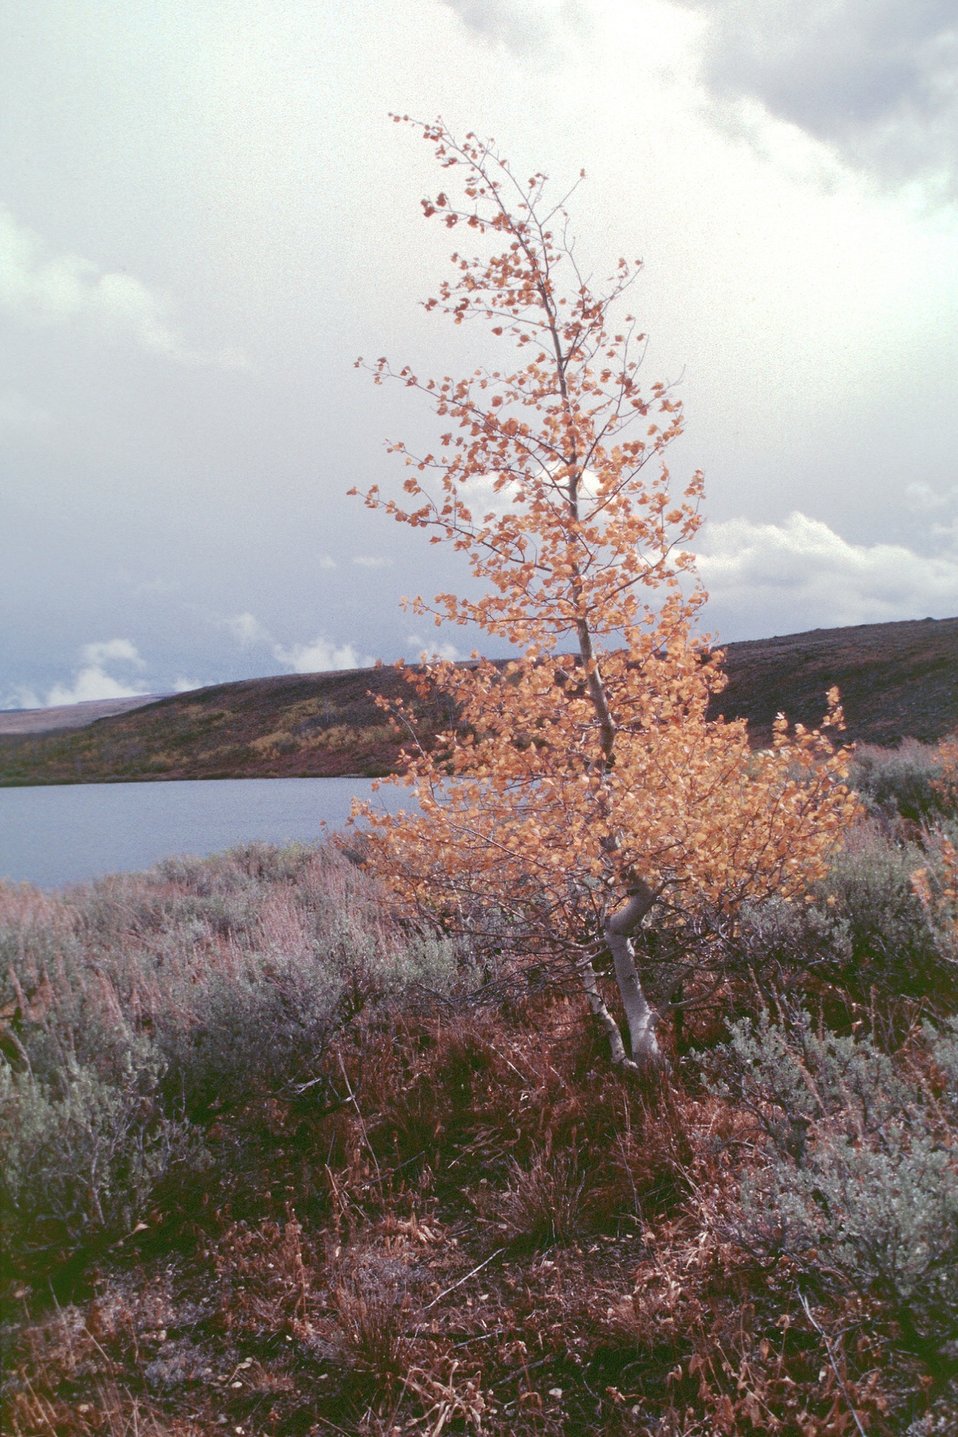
Aspen at Fish Lake, Steen's Mountain.